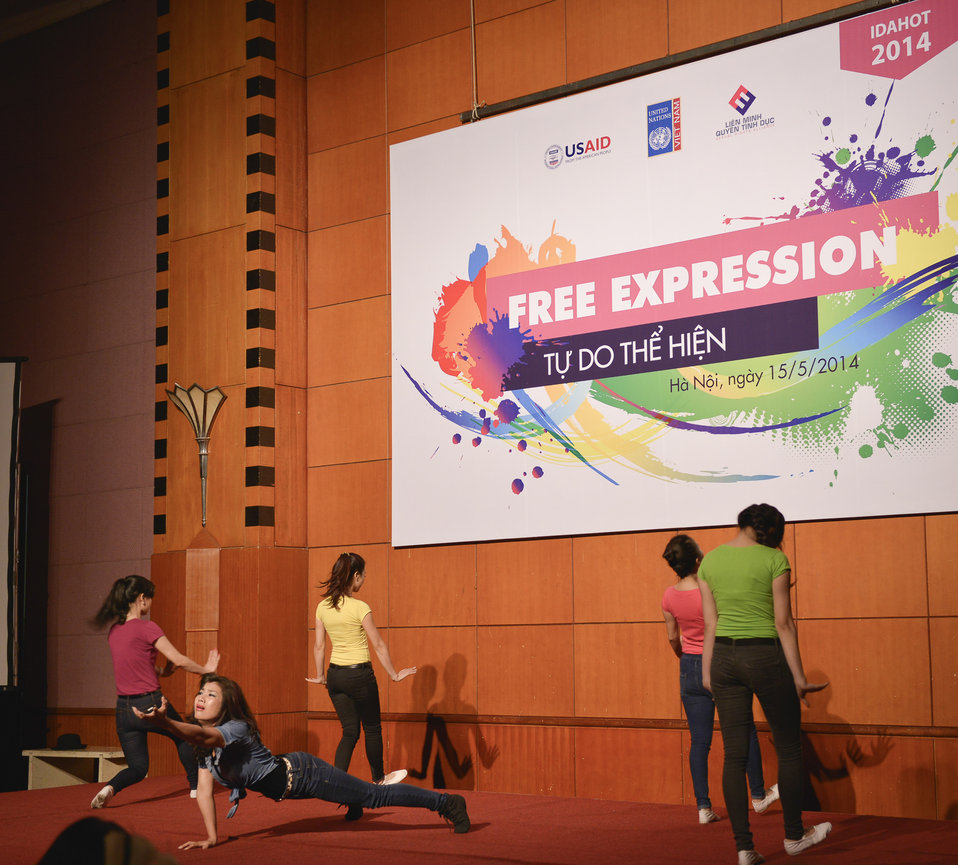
USAID supports celebration of IDAHOT Day 2014 in Hanoi

Hanoi, May 15, 2014.